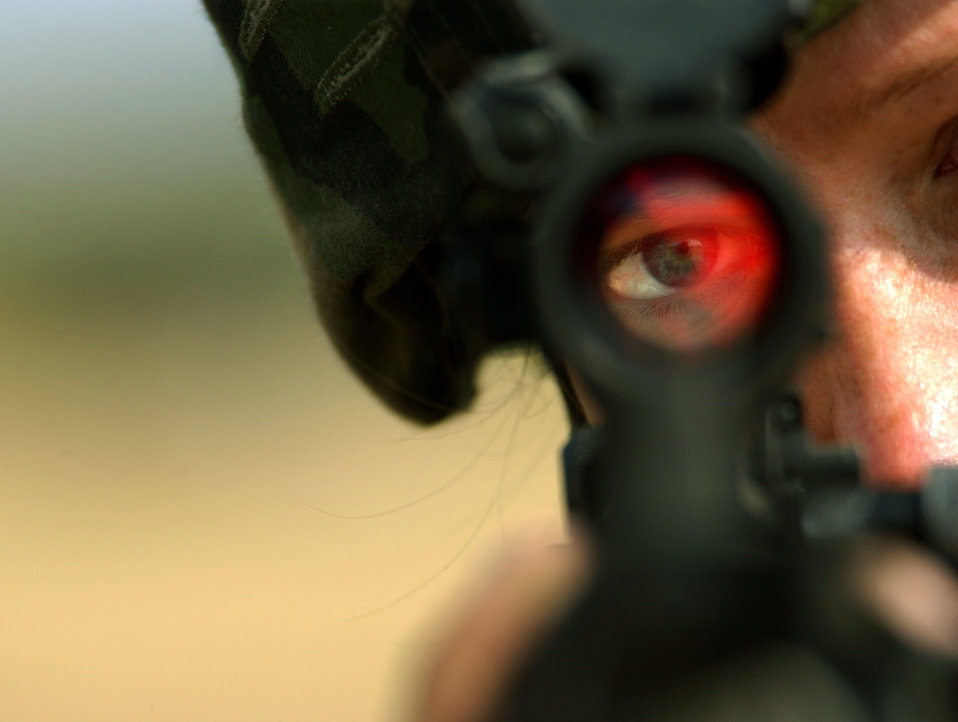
In my sight

FORT HUACHUCA, Ariz. -- Staff Sergeant Sally McCabe sights on pop-up targets here Oct. 18. Members of the U.S. Air Forces in Europe Defender Challenge team are spending three weeks here in preparation for the 2004 Defender Challenge competition. Defender Challenge, held at Lackland Air Force Base, Texas, is a security forces competition pitting competitors from major commands against one another. Sergeant McCabe is assigned to the 85th Security Forces Squadron at Naval Air Station Keflavik, Iceland.